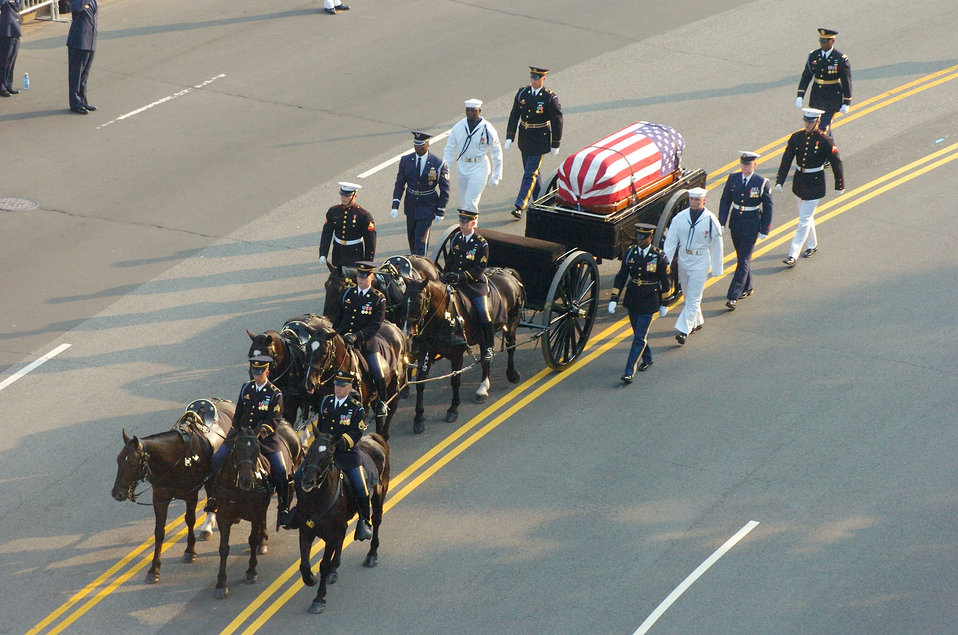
A solemn journey

WASHINGTON (AFPN) -- Members of a joint honor guard escort the caisson bearing former President Ronald Reagan's flag-draped casket during his funeral procession here June 9. He served as the military's commander-in-chief from 1981 to 1989.